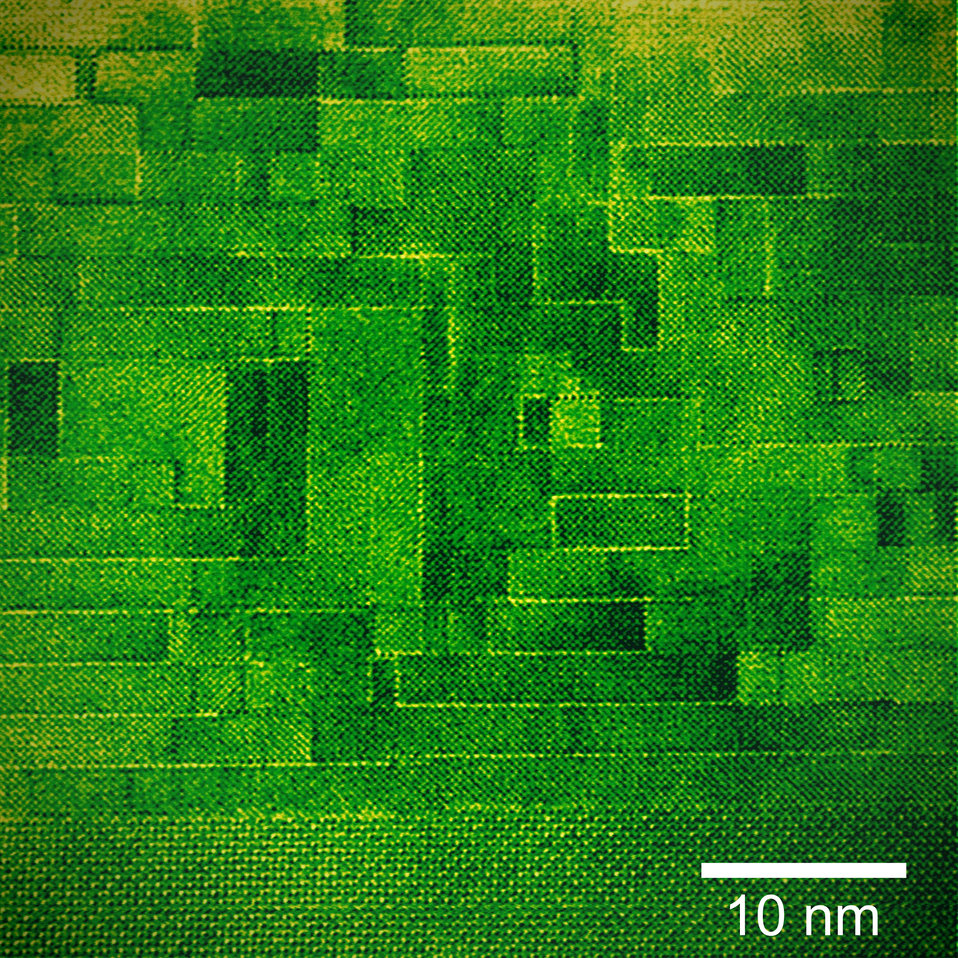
TEM

Not a brick wall. Electron microscope image of a cross section of the newly characterized tunable microwave dielectric clearly shows the thick layers of strontium titanate bricks separated by thin mortar lines of strontium oxide that help promote the largely defect-free growth of the bricks.

See also www.nist.gov/pml/electromagnetics/dielectric-110513.cfm

Credit: TEM image courtesy David Mueller. Color added for clarity by Nathan Orloff.